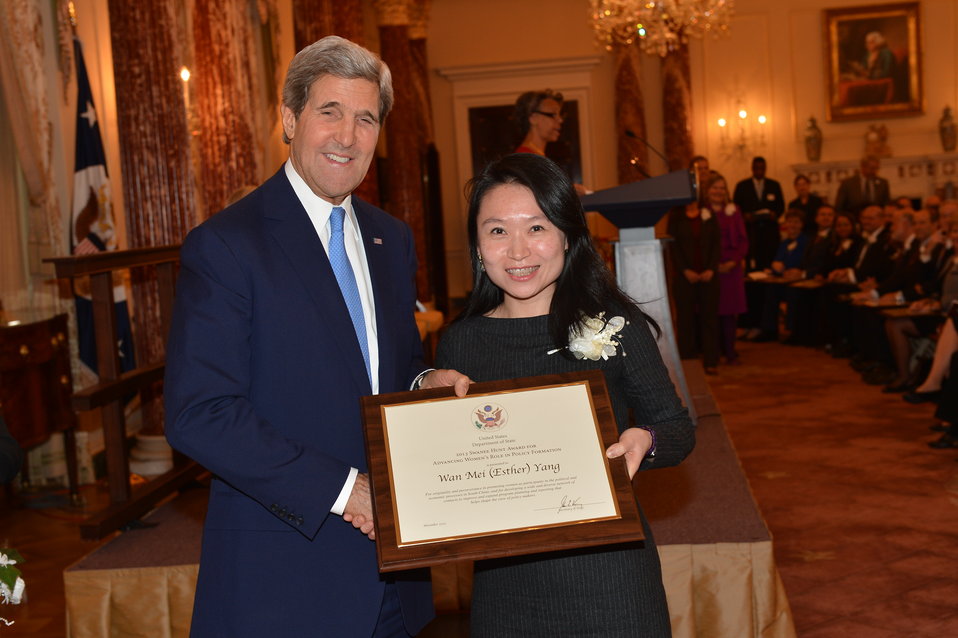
Secretary Kerry Poses for a Photo With Wan Mei (Esther) Yang

U.S. Secretary of State John Kerry poses for a photo with Wan Mei (Esther) Yang at the annual Department of State Awards Ceremony at the U.S. Department of State in Washington, D.C., on November 14, 2013.